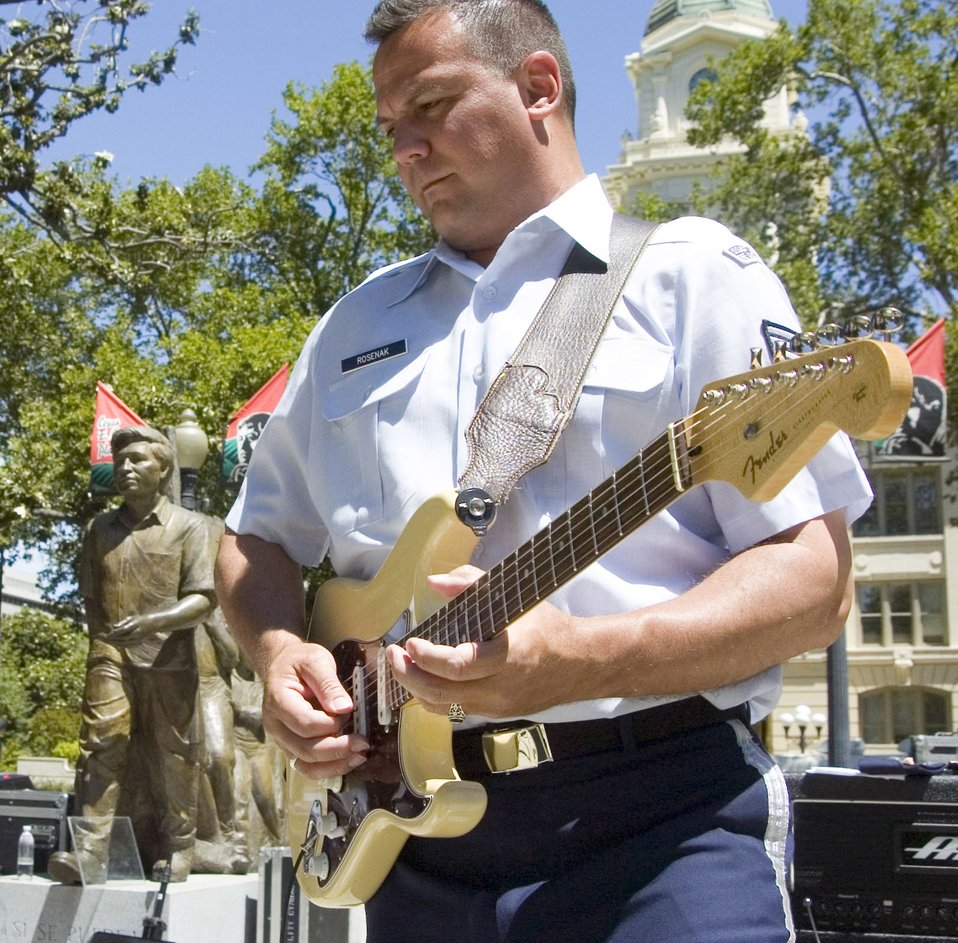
Band of the Golden West rocks downtown Sacramento

Guitarist Tech. Sgt. Gary Rosenak of the Air Force Band of the Golden West from Travis Air Force Base, Calif., performs in the Cesar Chavez Plaza as part of Air Force Week June 7 in Sacramento, Calif.